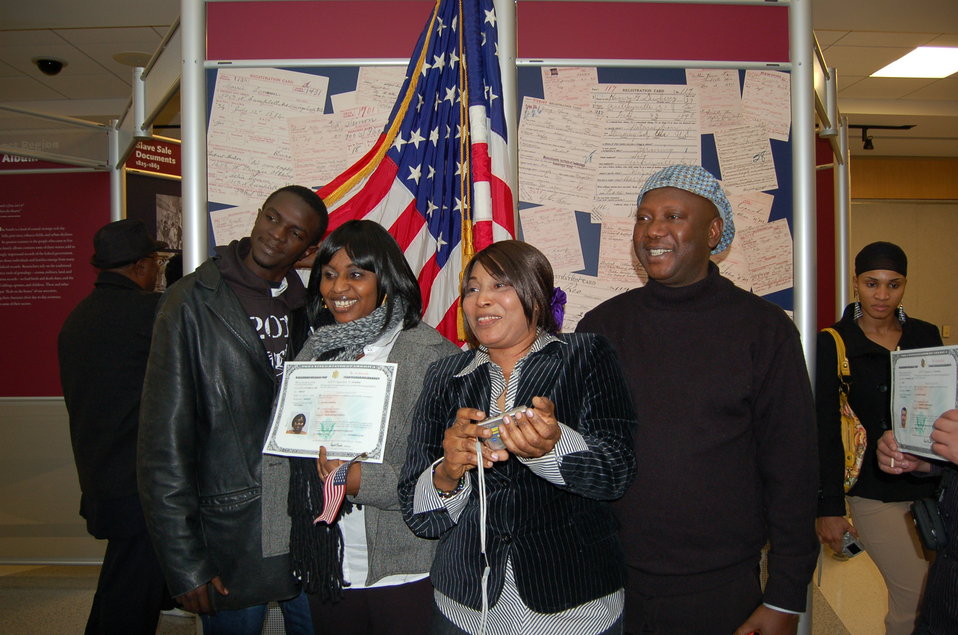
New Citizens